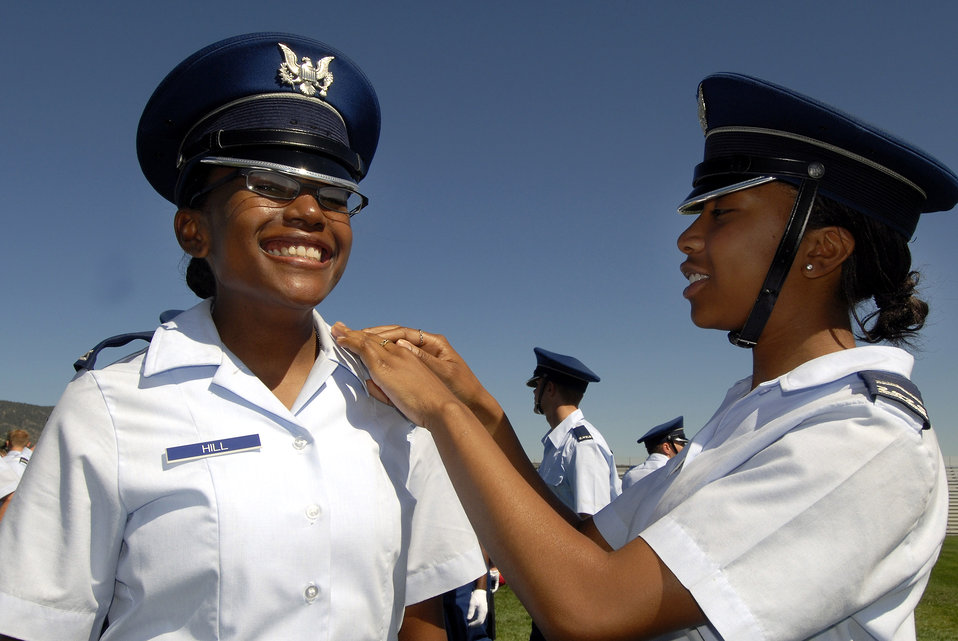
Acceptance Parade for Class of 2011

U.S. Air Force Academy Cadet 4th Class Samantha Hill receives her shoulder boards from Cadet 3d Class Nicole Elliot at the conclusion of the Acceptance Parade Aug. 8 at the Academy in Colorado Springs, Colo. The Acceptance Parade marks the formal acceptance of the new cadets into the cadet wing.